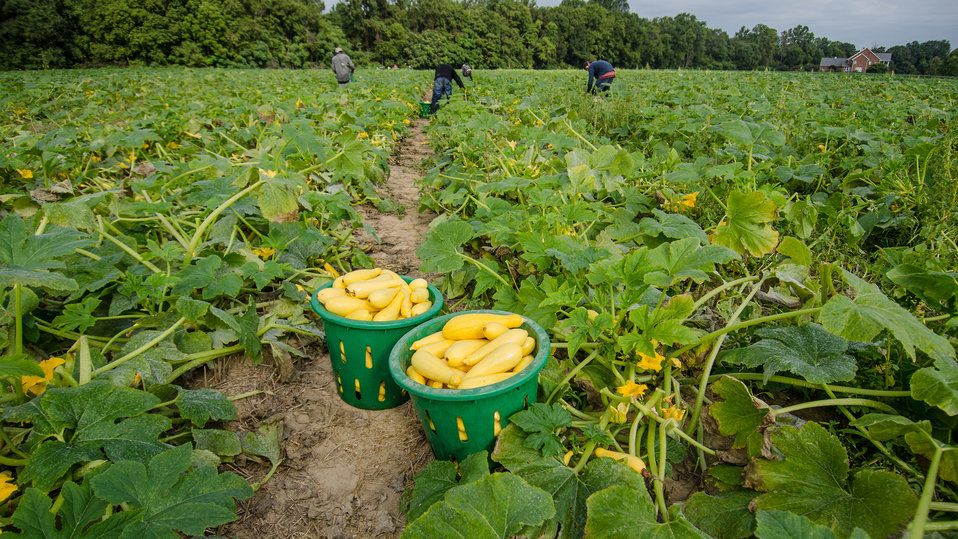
Migrant farm workers carefully select, trim and fill baskets with yellow squash for cleaning and packing aboard a mobile processing trailer at Kirby Farms Farms in Mechanicsville, VA on Sep. 20, 2013. Kirby Farms is a third-generation family farm that covers 500 acres, and generates produce and grains on a year-around operation.